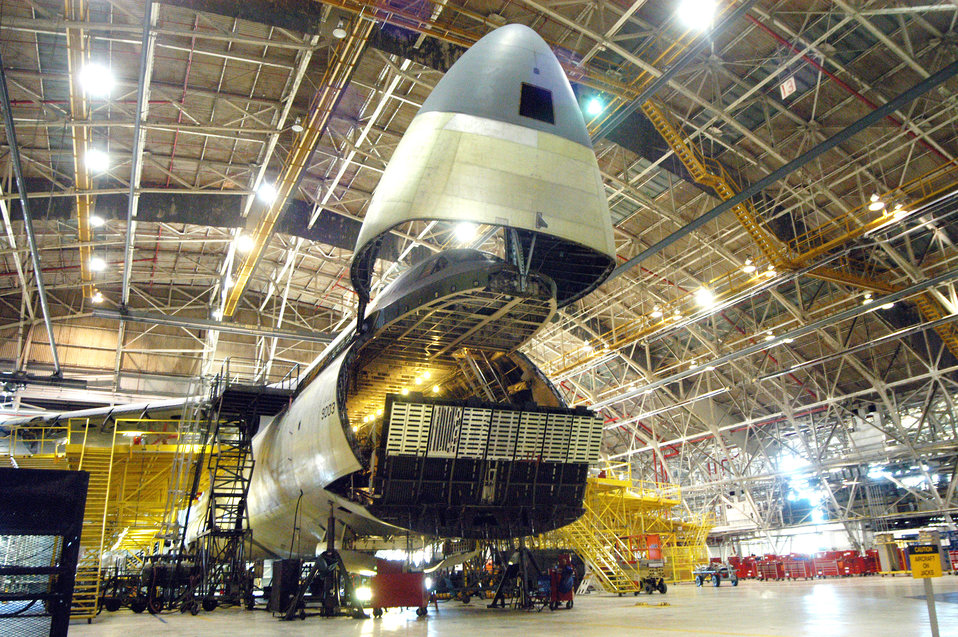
C-5 Programmed Depot Maintenance earns accolades

C-5 Galaxy workers from Robins Air Force Base, Ga., received the 2006 Chief of Staff Excellence Award. The C-5 Programmed Depot Maintenance team improved processes through lean initiatives and implementation of critical chain project management, increasing the capacity to do unprogrammed C-5 work.